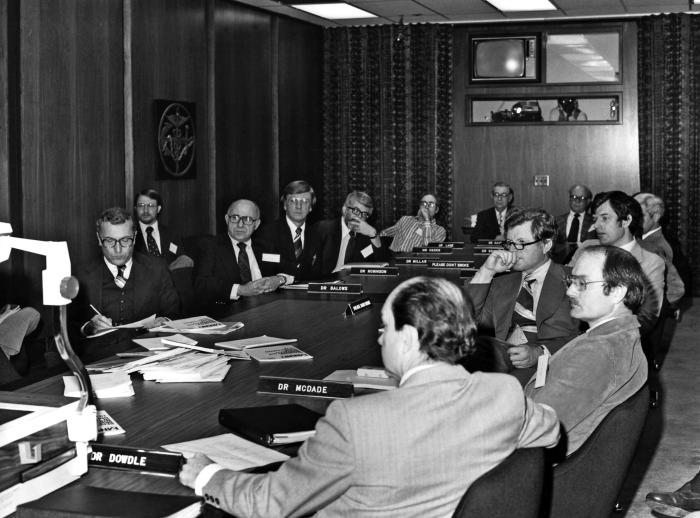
This photograph showed a meeting held in the Centers for Disease Control's executive conference room prior to the Senate Hearing on Legionnaire's disease, which was held at the CDC on November 9, 1977.